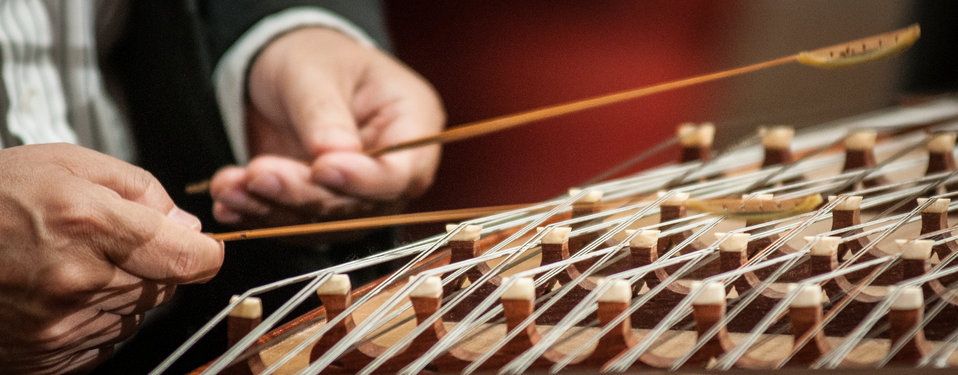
The Washington Chinese Traditional Orchestra Ensemble performs 'Melody of Purple Bamboo,' 'Jasmine Flower,' and 'Joys of Beaming,' during the U.S. Department of Agriculture (USDA) Asian Pacific American Heritage Month Observance, at the USDA headquarters, Whitten Building patio, in Washington, D.C., on Thursday, May 23, 2013. This year’s theme is “Building leadership; Embracing the Cultural Values and Inclusions.”